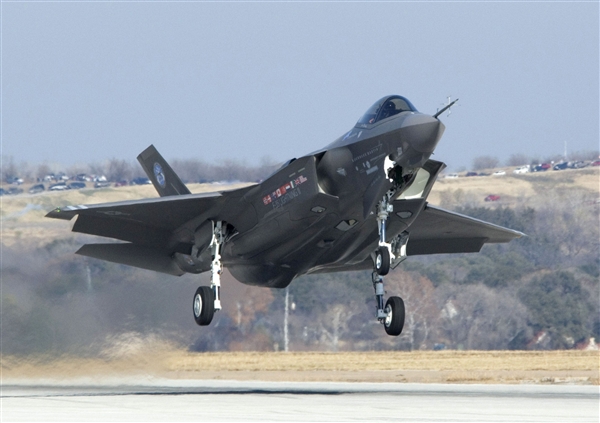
F-35 Lightning II

An F-35 Lightning II joint strike fighter takes off from a Lockheed Martin facility in Fort Worth, Texas, for an initial flight as part of system development testing.